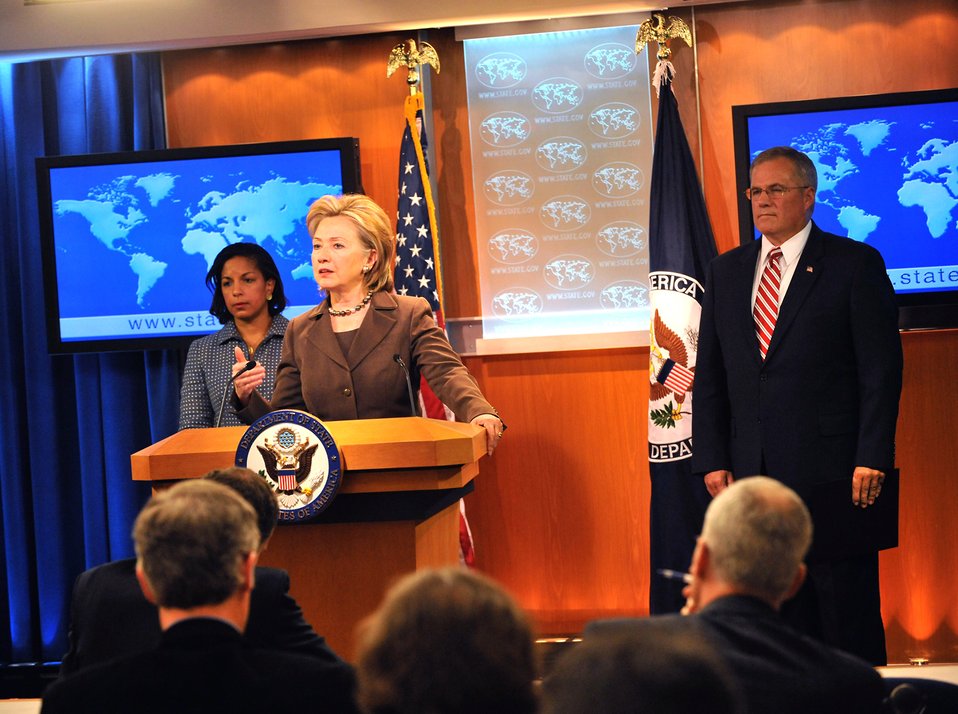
Secretary Clinton Unveils New Policy Toward Sudan

U.S. Secretary of State Hillary Rodham Clinton unveils the new comprehensive policy toward Sudan at the U.S. Department of State, Washington, D.C., March 19, 2009.